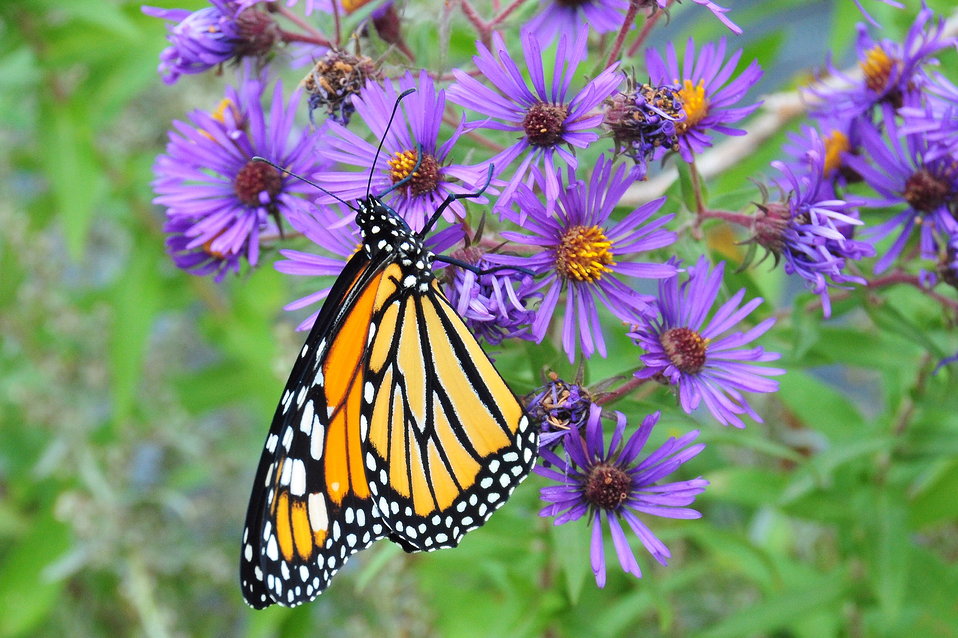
Monarch on New England Aster